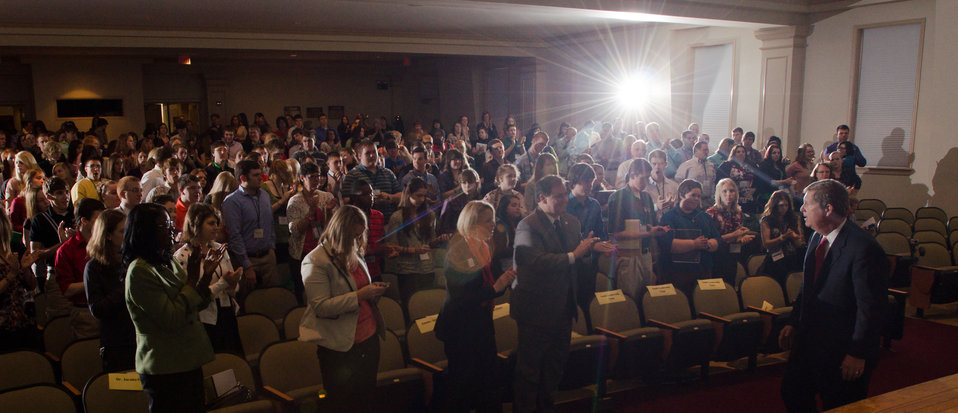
Agriculture Secretary Tom Vilsack receives a standing ovation from 4-H members at the National 4-H Youth Center in Chevy Chase, MD, on Monday, March 26, 2012 after making the keynote address.